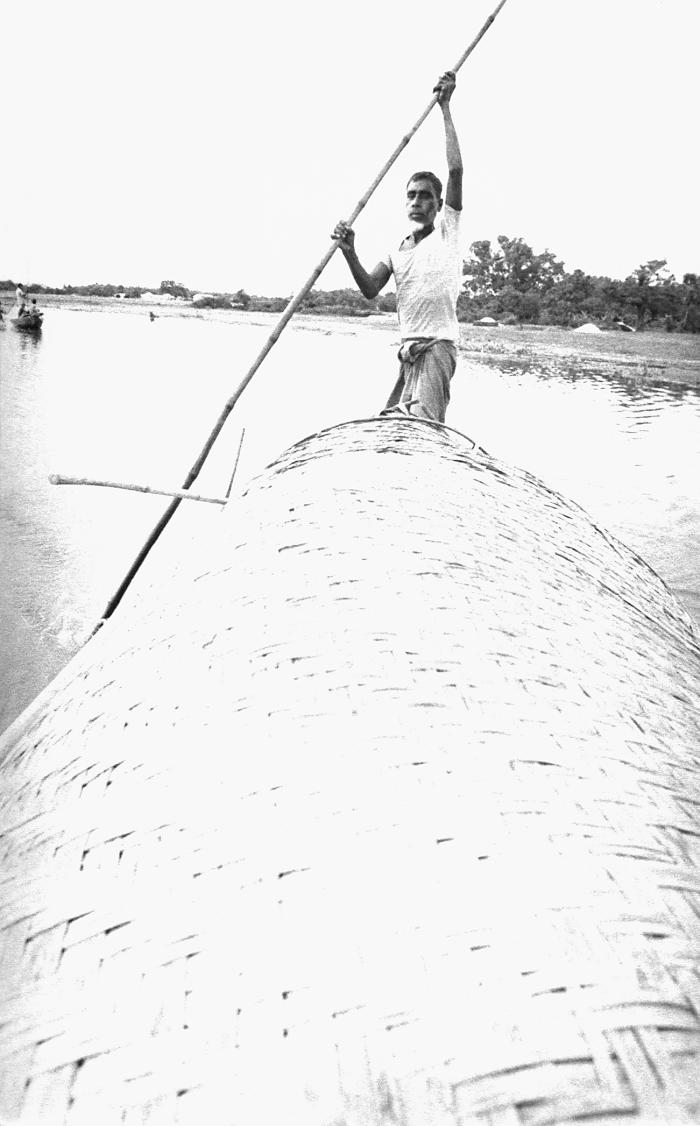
This photograph depicted a Bangladesh man as he maneuvered his boat along a river water way by pushing it using a long bamboo pole. This image was part of a series provided by Dr. Stan Foster, and captured by Pierre Claquin, M.D., B.A.C., who at the time was a member of the World Health Organization's Smallpox Eradication Program. It was part of a series photographed by former E.I.S. officer, Stanley O. Foster M.D., M.P.H., and was one of a series entitled 'The Story of One Smallpox Jeep', which depicted the travails faced by the jeep, and its occupants of public health practitioners, as they road through the Bangladesh countryside in an attempt to eradicate smallpox from the country.